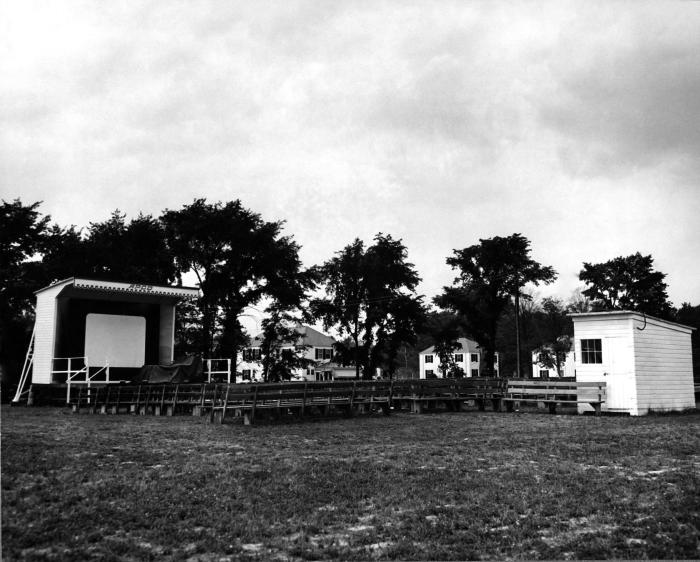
Provided by the Center for Disease Control's (CDC), National Institute for Occupational Safety and Health (NIOSH), this historic 1943 image depicted the outdoor theater, which was located on the grounds of an Ohio TNT military ordnance manufacturing plant. Recreation helped to improve moral, and the overall work experience of plant employees, such as attending theatrical presentations.